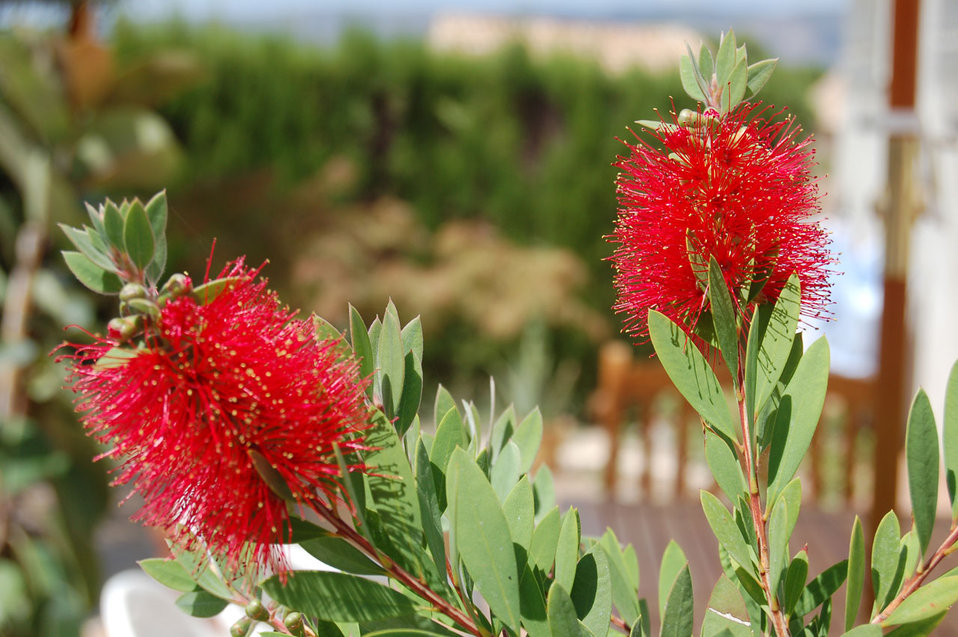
Duo

Charming.